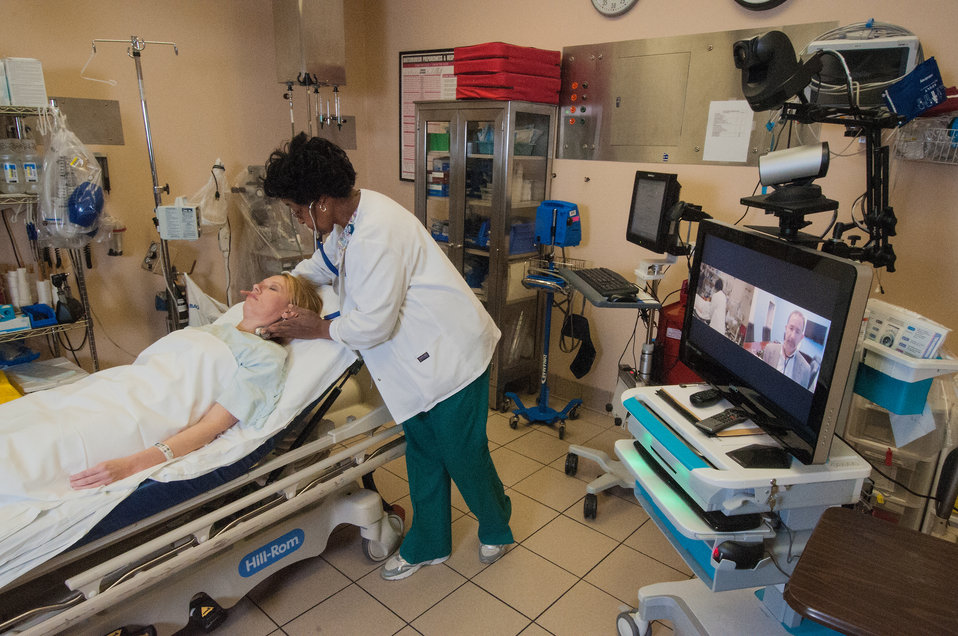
R.J. Taylor Memorial Hospital, Inc. Emergency Room(ER)/ Intensive Care Unite (ICU) Nurse Manager Lynn Grant, RN, in Hawkinsville, GA discusses patients’ diagnosis and symptoms with a doctor in Atlanta, GA via the hospitals Electronic Medical Records System on Mar. 6, 2013. The Electronic Medical Records System is an electronic point-of-care capture of medical data that can be easily accessed and allow for integration across different health care settings with internet-work connected information systems. Such records may include a wide range of data in comprehensive or summary form, including demographics, medical history, medication allergies, immunization status, laboratory test results, radiology images and billing information. The hospital purchased the Electronic Medical Records System under an incentive program by the Federal government through the U.S. Department of Agriculture (USDA) Rural Development (RD) Community Facilities Loan (CF) that ensures fiscally responsive access to superior quality integrated health care.